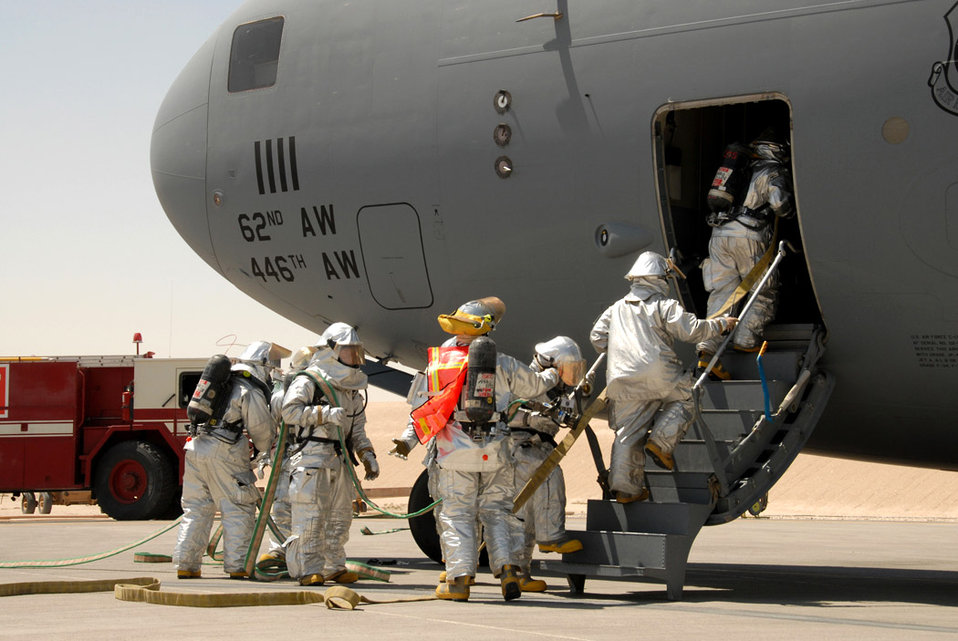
CENTAF Airpower Summary for April 24, 2007

Firefighters from the 379th Expeditionary Civil Engineer Squadron's fire and emergency services flight at a deployed location in Southwest Asia practice entering a C-17 Globemaster III during an exercise April 16. The hands-on training ensures firefighters are ready to deal with any type of emergency. Firefighters must be proficient in shutting-down aircraft engines, activating and discharging the on-board fire suppression system and more.